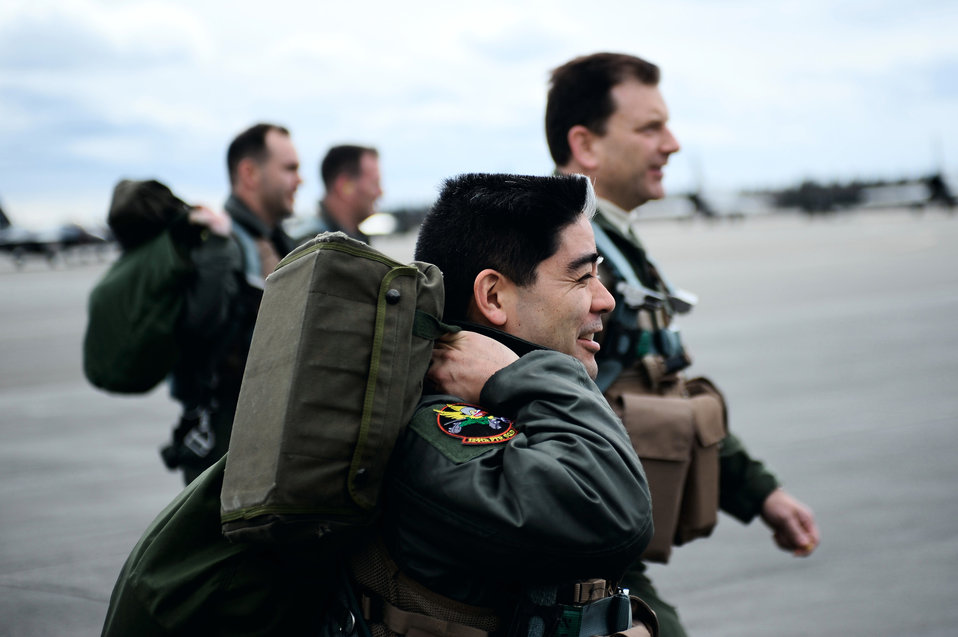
Fly, fight, win: Red Flag-Alaska pilots

Pilots from the 124th Fighter Squadron at Des Moines, Iowa, walk to their F-16 Fighting Falcons during Red Flag-Alaska 09-2 April 24 at Eielson Air Force Base, Alaska. The exercise enables aviation units to sharpen their skills by flying ten simulated combat sorties in a realistic threat environment.